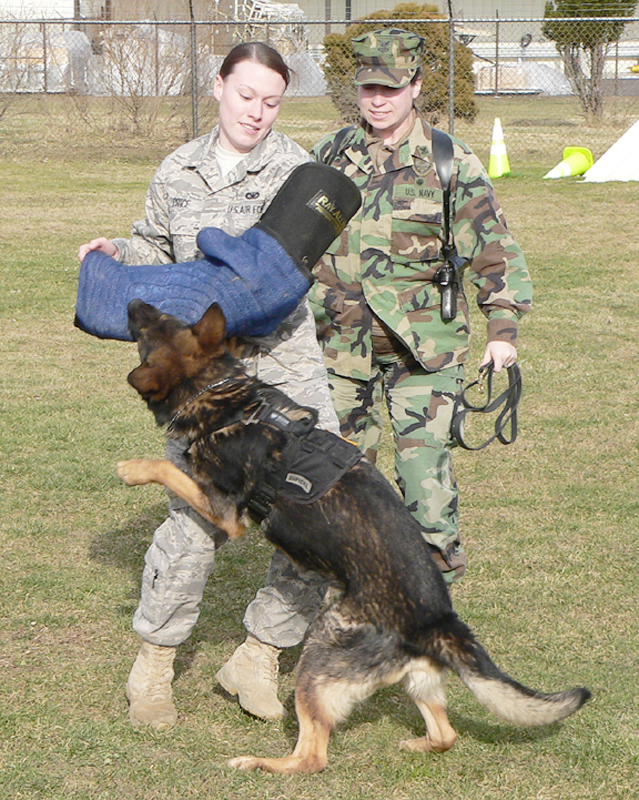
A dog's life at McGuire

Senior Airman Allison Price (left) uses a protective sleeve while Navy Petty Officer 2nd Class Ashley Bidon waits to give the release command during a controlled aggression exercise at Joint Base McGuire-Dix-Lakehurst, N.J., Jan. 5, 2010. The handlers use positive reinforcement such as verbal praise and toys to reward their dogs for good behavior. Airman Price is a dog handler with the 87th Security Forces Squadron.